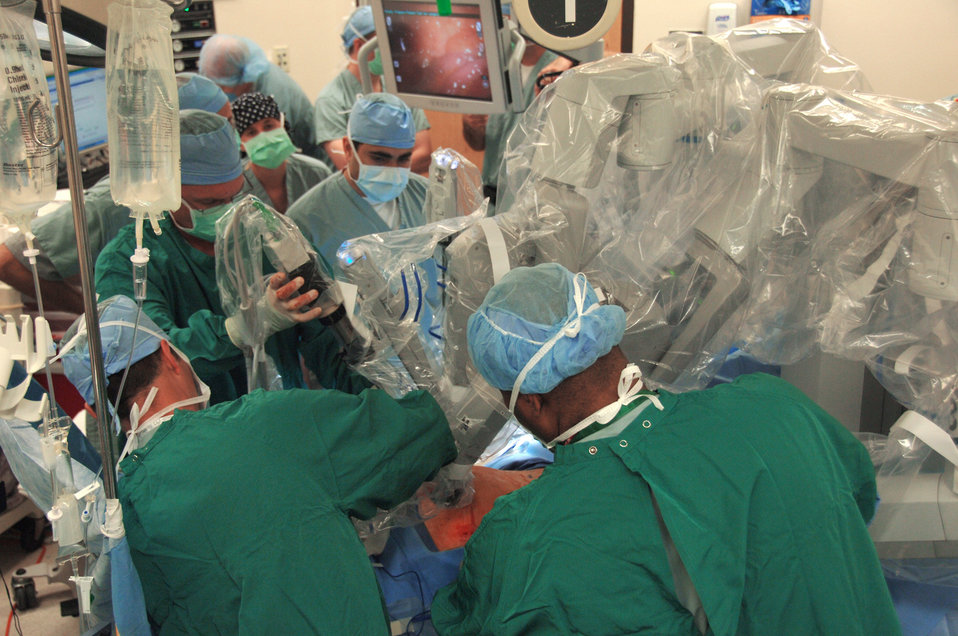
Doctor performs first robot-assisted surgery in the Air Force

A robot is placed by doctors for a laparoscopic prostatectomy, or the surgical removal of prostate cancer, April 10 at Wilford Hall Medical Center, Lackland Air Force Base, Texas. This was the first robot-assisted surgery in the Air Force and was performed by Lt. Col. (Dr.) Kyle Weld, director of endourology at the 59th Surgical Specialties Squadron.